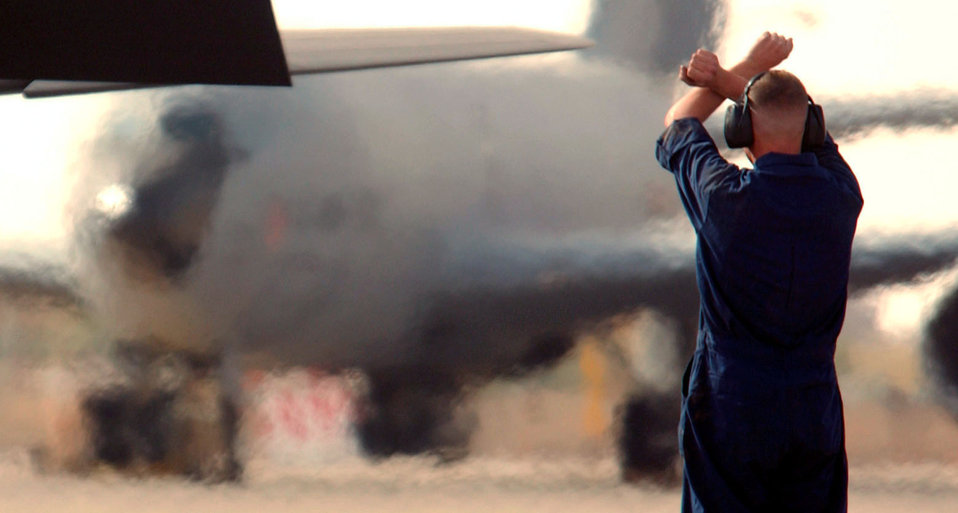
Stand by

SOUTHWEST ASIA -- An F-15 fighter crew chief signals